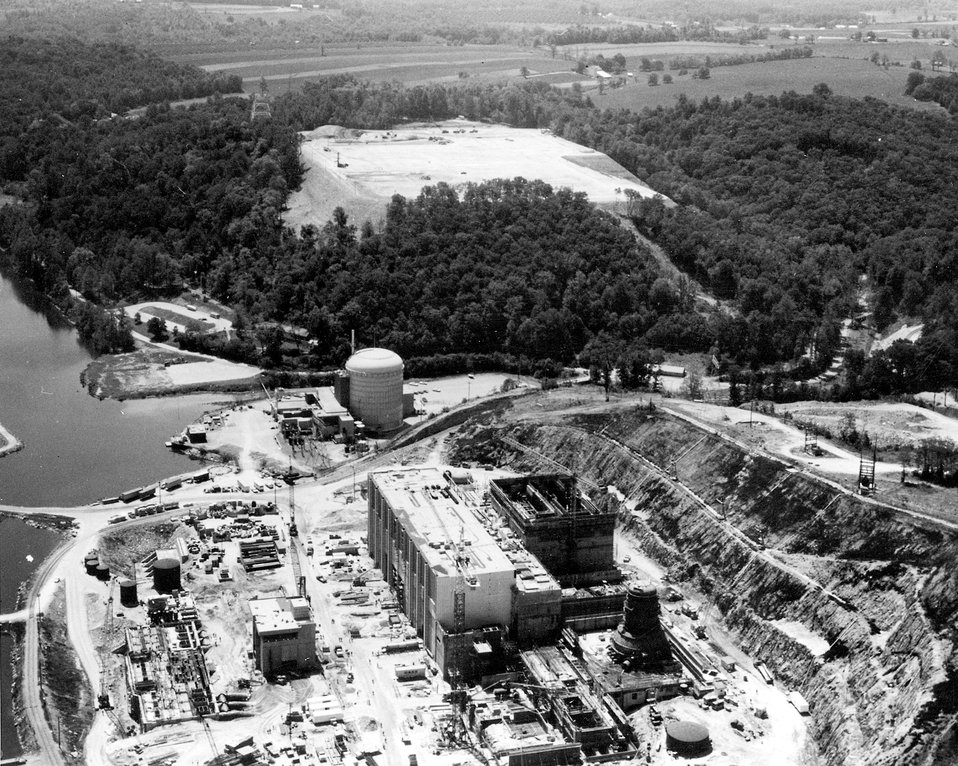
The addition of two units to the Peach Bottom Atomic Power Station will provide a total of 2,170,000 kilowatts of electric power. Circa 1970.